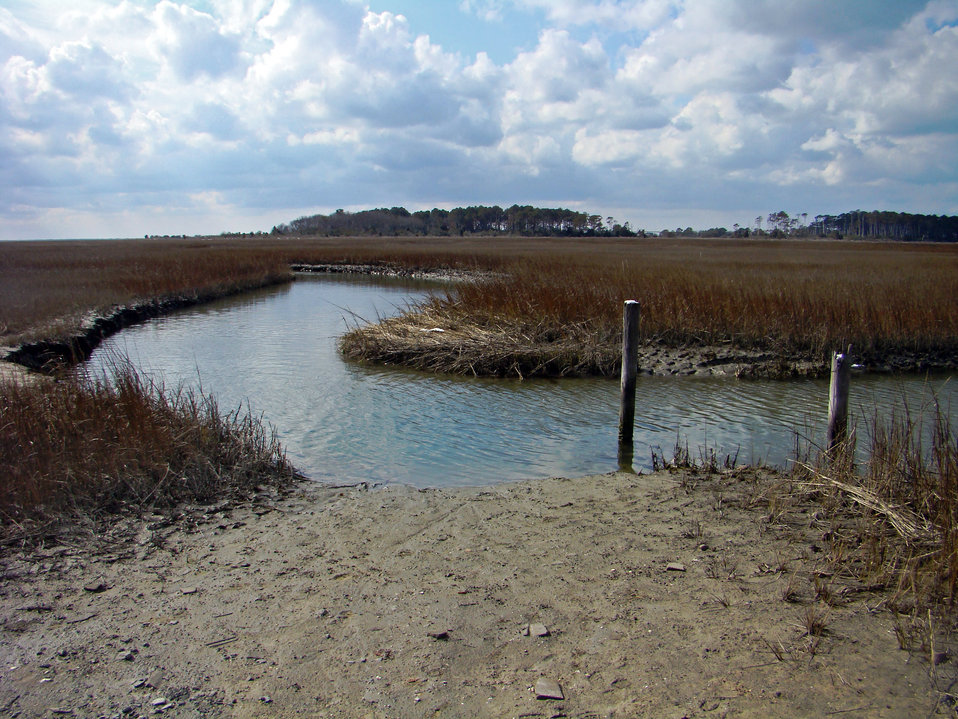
Salt marsh

Eastern Shore of Virginia National Wildlife Refuge, VA.